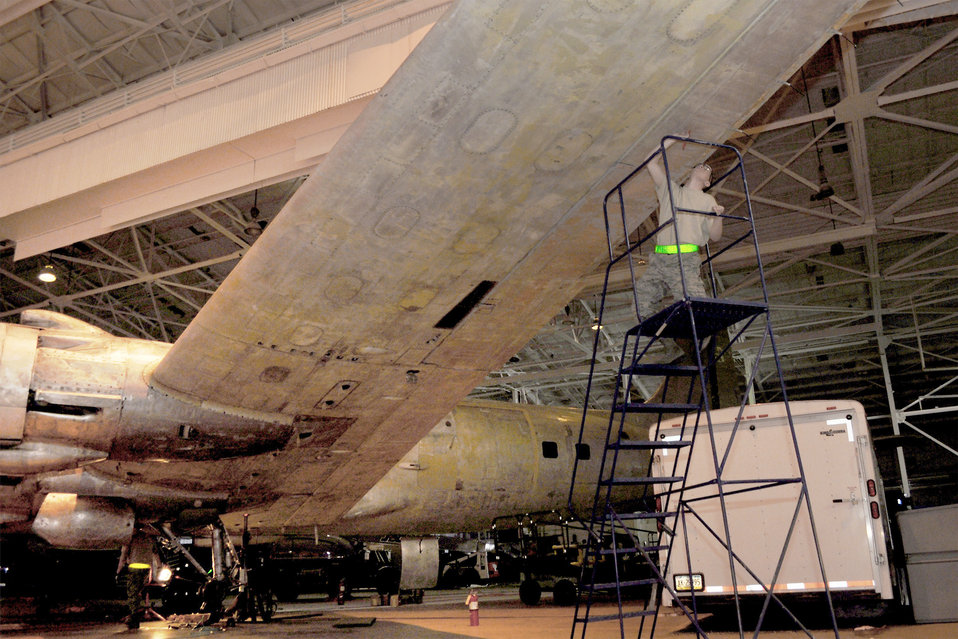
Aircraft Restoration

An Airman from the 305th Maintenance Squadron at Joint Base McGuire-Dix-Lakehurst, N.J., searches for corrosion March 4, 2011, on the wing of a C-118 Liftmaster that is being restored by active-duty and Reserve Airmen and civilians there. Liftmasters were the first cargo airplanes stationed at JB McGuire and helped the base to define its role as an air mobility gateway. When the restoration is finished, the aircraft will be displayed near the base’s passenger terminal.